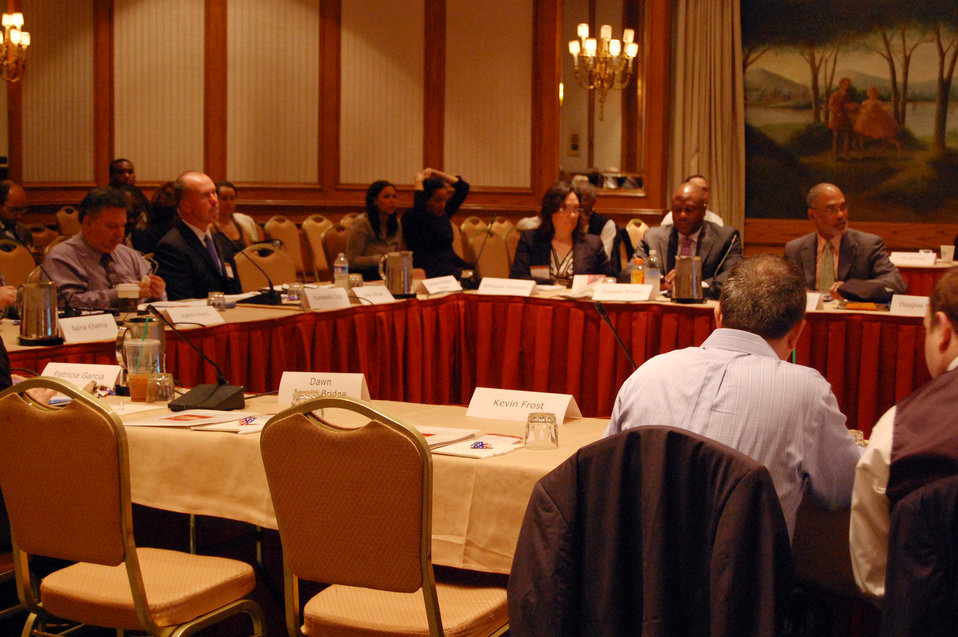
PACHA conf036